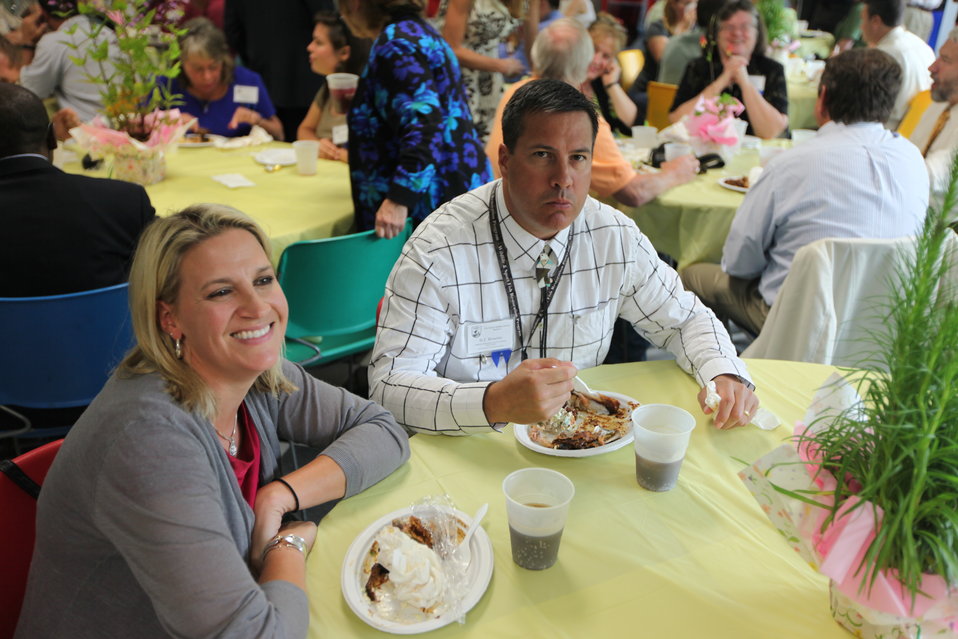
Northeast Region Employee Appreciation Awards

Luncheon